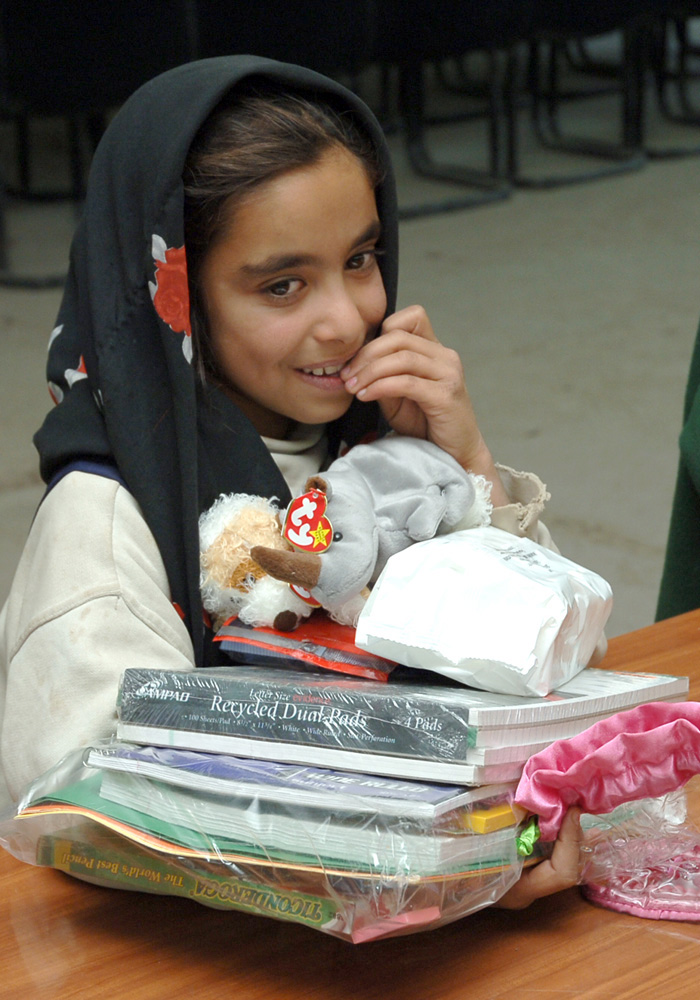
Baghdad clinic

BAGHDAD, Iraq (AFPN) -- A young Iraqi girl receives free school supplies and toys before leaving the medical clinic here.